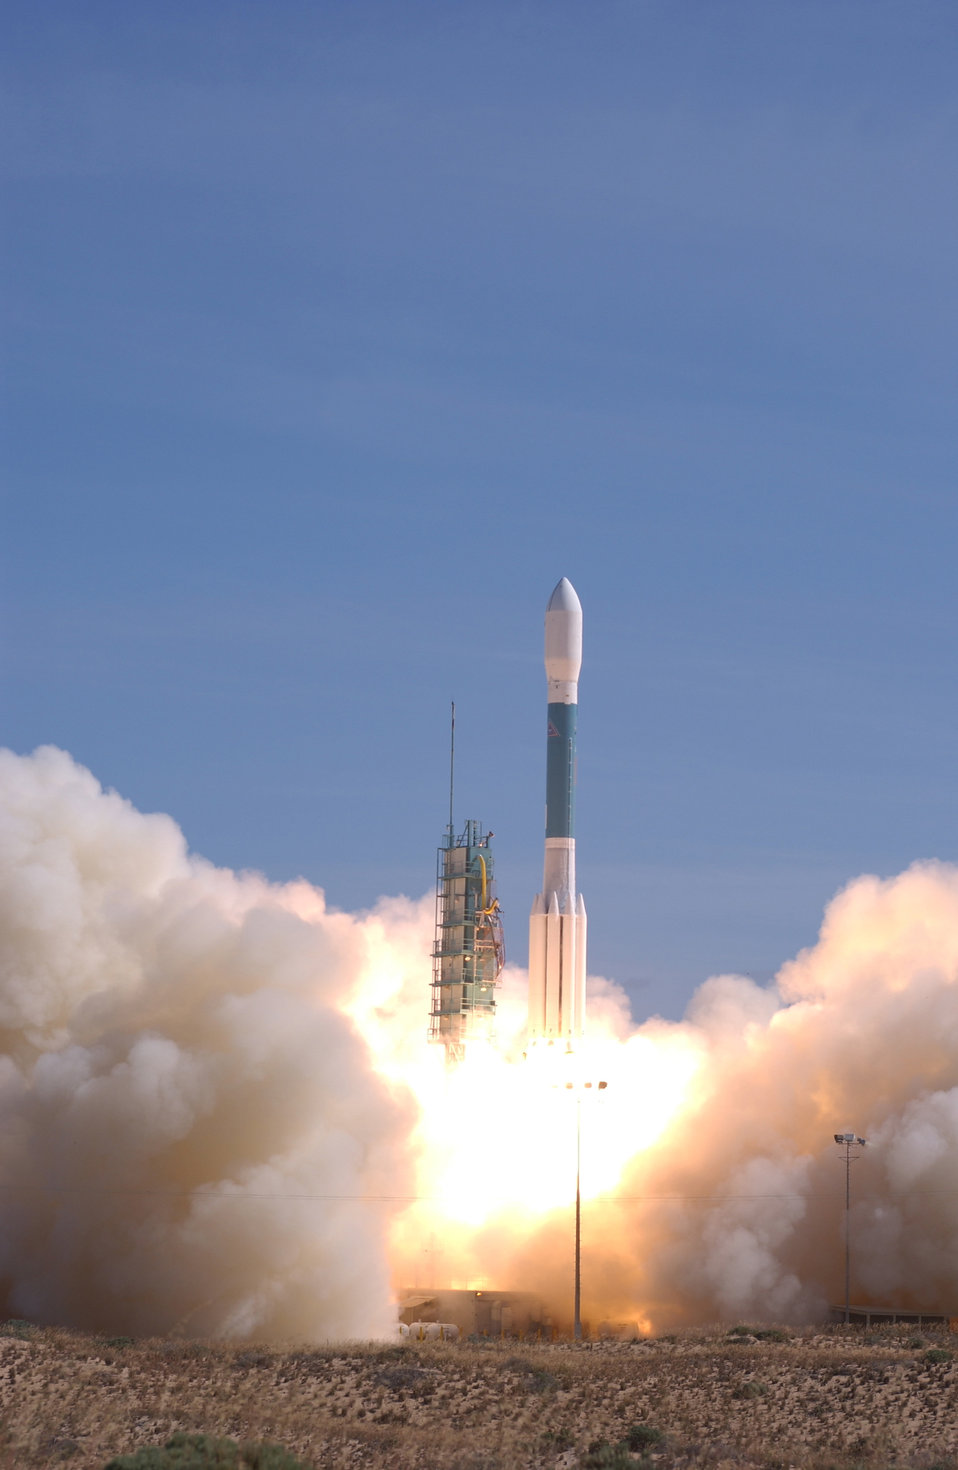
3, 2, 1 ....

VANDENBERG AIR FORCE BASE, Calif. -- A Delta II rocket launched from here April 20. The rocket carried the Gravity Probe-B experiment, a project between NASA and Stanford University to test Einstein's theory of relativity. The experiment will check tiny changes in four gyroscopes on a satellite orbiting 400 miles directly above Earth's poles. Scientists will use the experiment to measure how space and time are warped by Earth's presence.